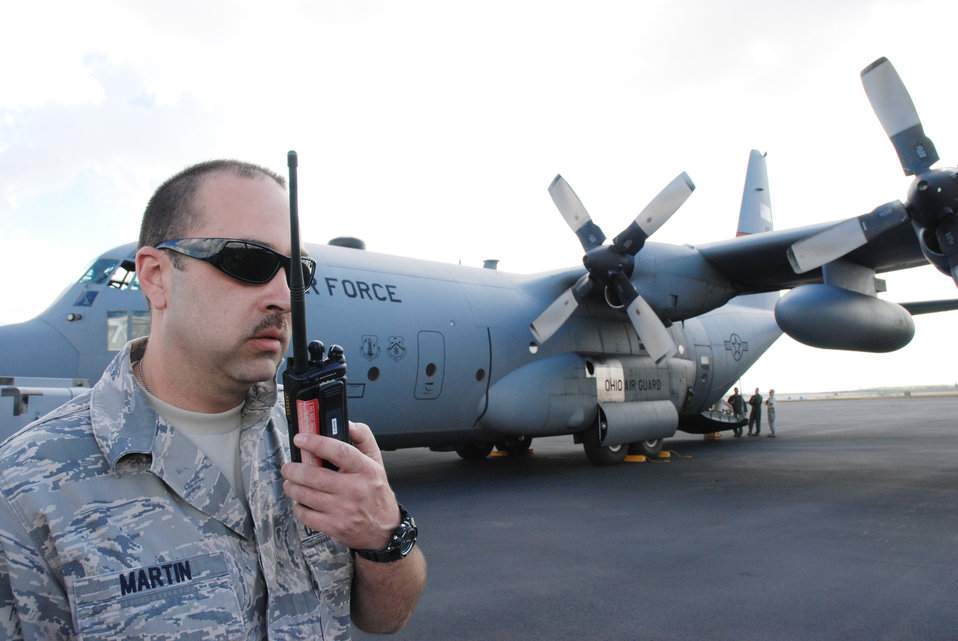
Coronet Oak aircrews respond to Haiti earthquake

Master Sgt. Heath Martin, a 94th Maintenance Squadron crew chief from Dobbins Air Reserve Base, Ga., provides transient alert support Jan. 22, 2010, to Operation Unified Response aircraft at Homestead Air Reserve Base, Fla. Various airlift aircraft, including Air Force Reserve Command and Air National Guard C-130 Hercules, provided disaster-relief airlift to Haiti.